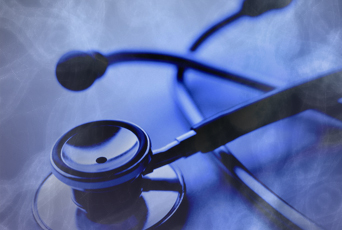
Enlisted Airmen can apply for nurse commissioning program

The Air Force is now accepting applications from qualified enlisted members for Nurse Enlisted Commissioning Program. The NECP selection board is scheduled to convene at the Air Force Personnel Center at Randolph Air Force Base, Texas, in July. Applications must be received no later than June 25.